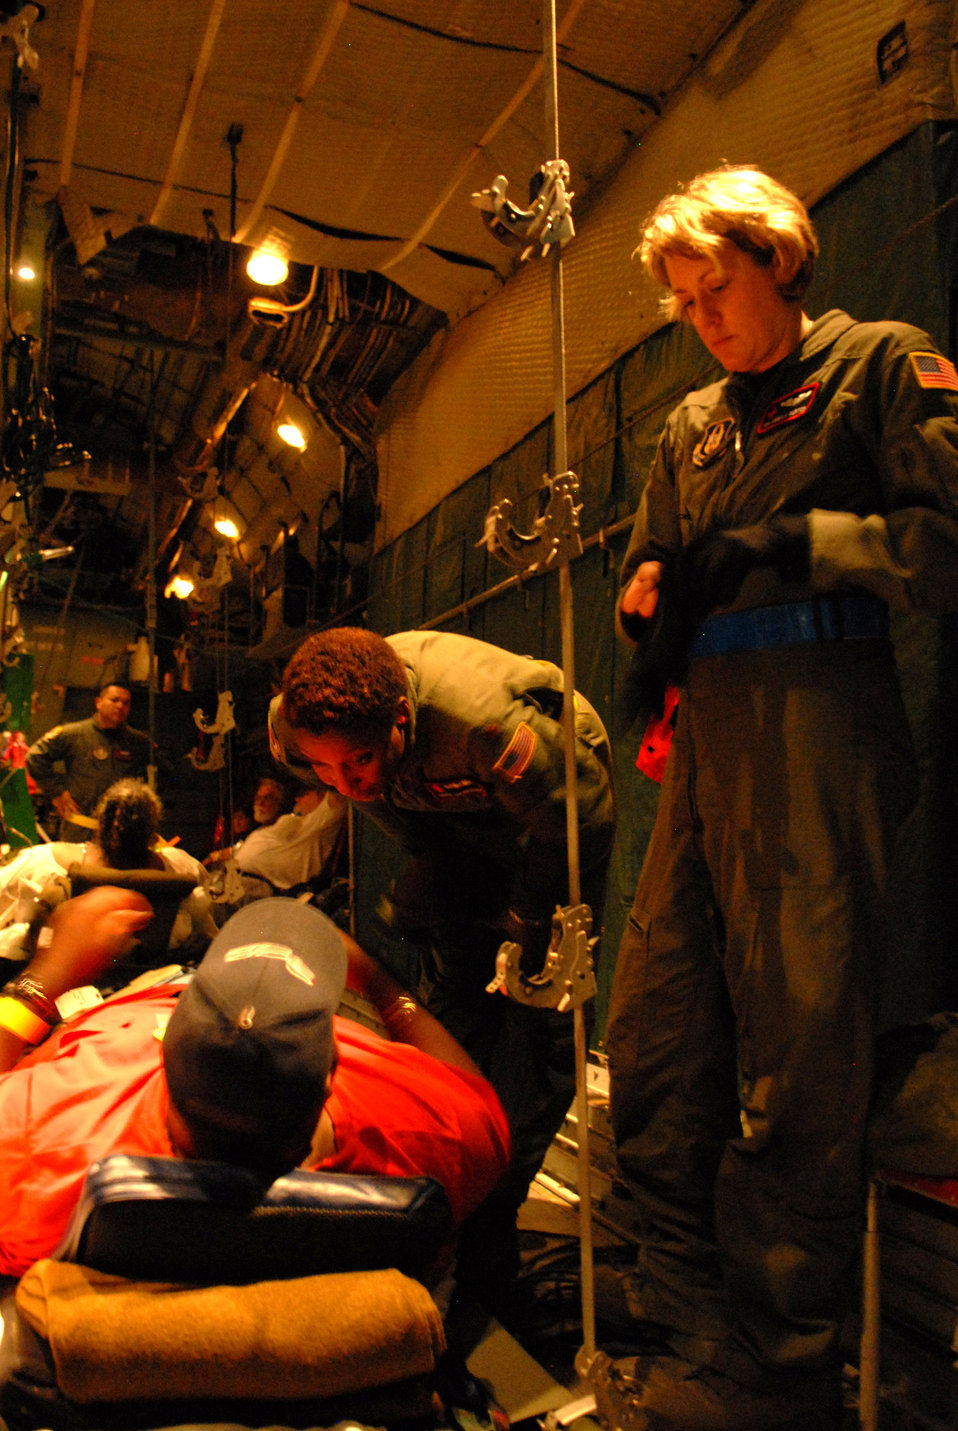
Airman evacuate patients from Beaumont

Maj. Traci Shamburger (left) and Senior Airman Melinda Ford prepare medical patients Sept. 12 for their flight from the airport in Beaumont, Texas to Lackland Air Force Base in San Antonio. These patients are being transported in C-130 Hercules aircraft by aircrews from Little Rock AFB, Ark., and medical Airmen from the 908th Aeromedical Evacuation Squadron at Scott AFB, Ill., in preparation for Hurricane Ike's landfall in southern Texas.